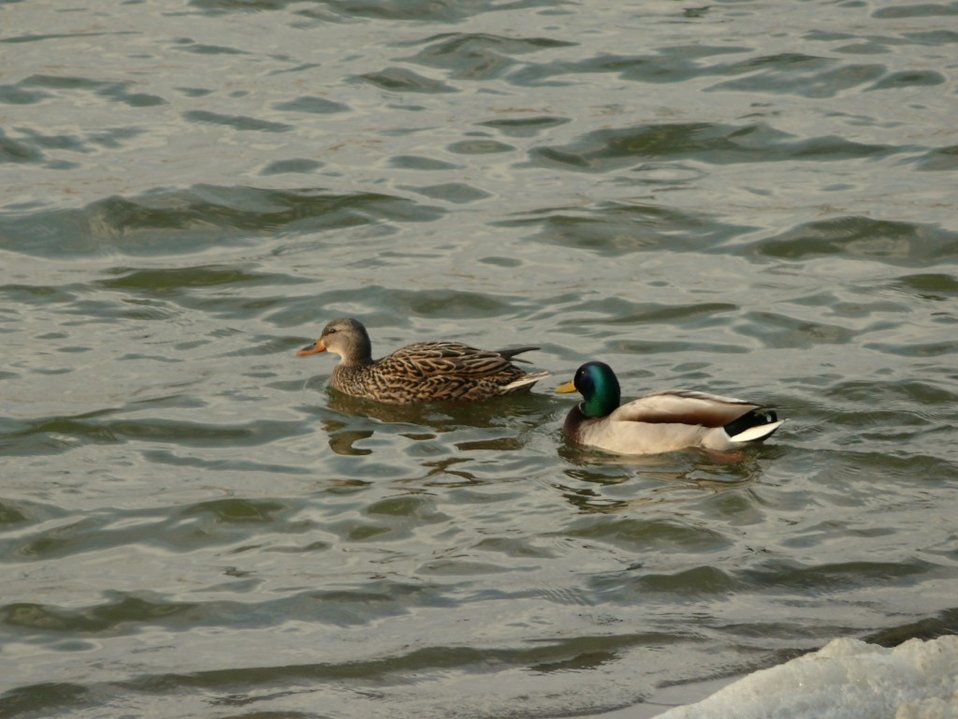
== Licensing: ==